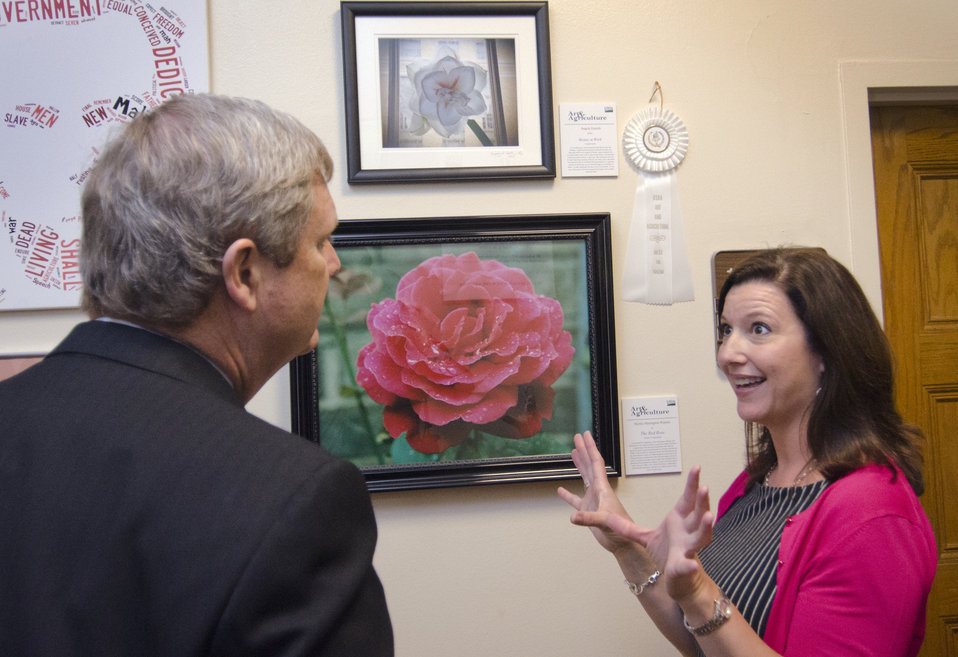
Agriculture Secretary Tom Vilsack visits the gallery of winning entries and talks with Angela Emrich at the Art and Agriculture competition in the South Building, Washington, D.C on Thursday, May 31, 2012. U.S. Department of Agriculture (USDA) full-time and part-time employees submitted art based on ten agricultural themes. The event was part of USDA's 150th Anniversary celebration and the winning artwork is on display from May 15 through December 31, 2012. Artistic expression is a creative outlet that is vital for an individual to grow and develop in their environment.